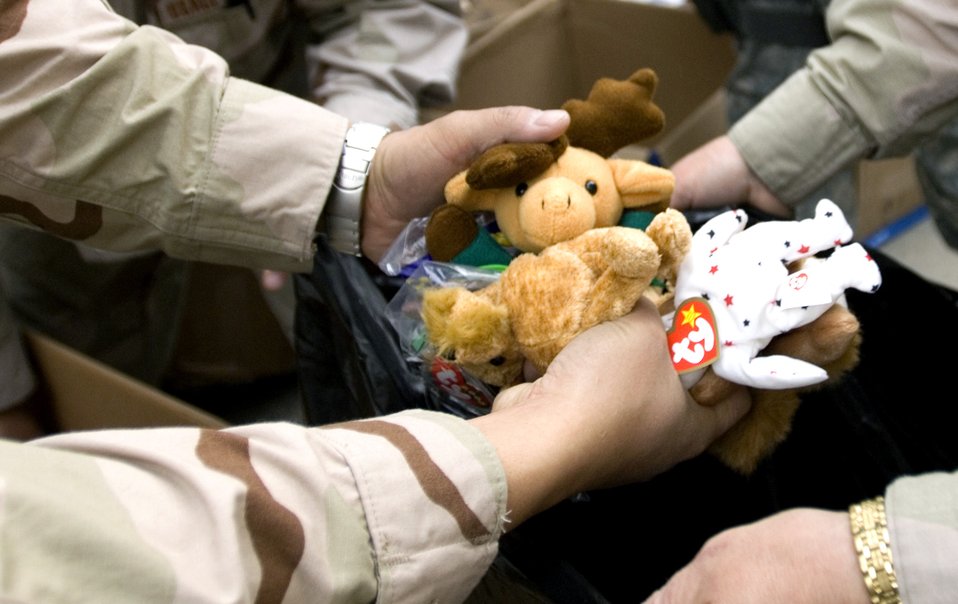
Joint forces volunteers donate time, goods

Department of Defense civilians and coalition servicemembers banded together March 16 to sort bags of clothes, toys, and shoes to donate to approximately 1,000 local Afghans at a refugee camp in Dar Ul Aman in support of the volunteer community reach program. The program volunteers provide this service every month thanks to donated items from U.S. citizens.